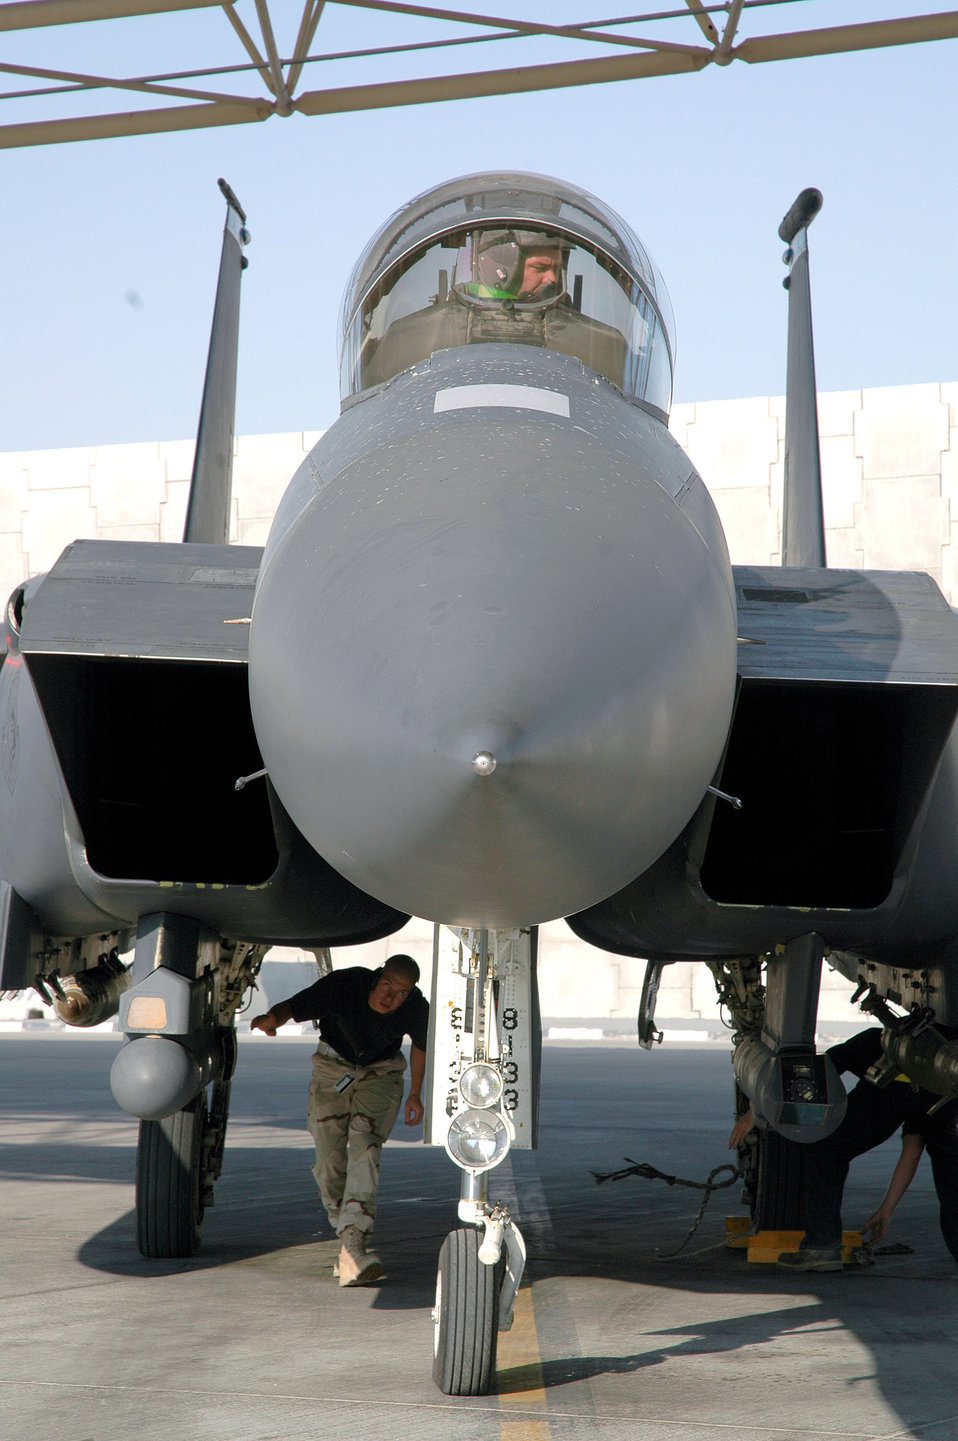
Back home again

FORWARD DEPLOYED LOCATION (AFPN) -- Maintainers park an F-15E Strike Eagle after a mission over Iraq. The fighter is from the 492nd Expeditionary Fighter Squadron here.